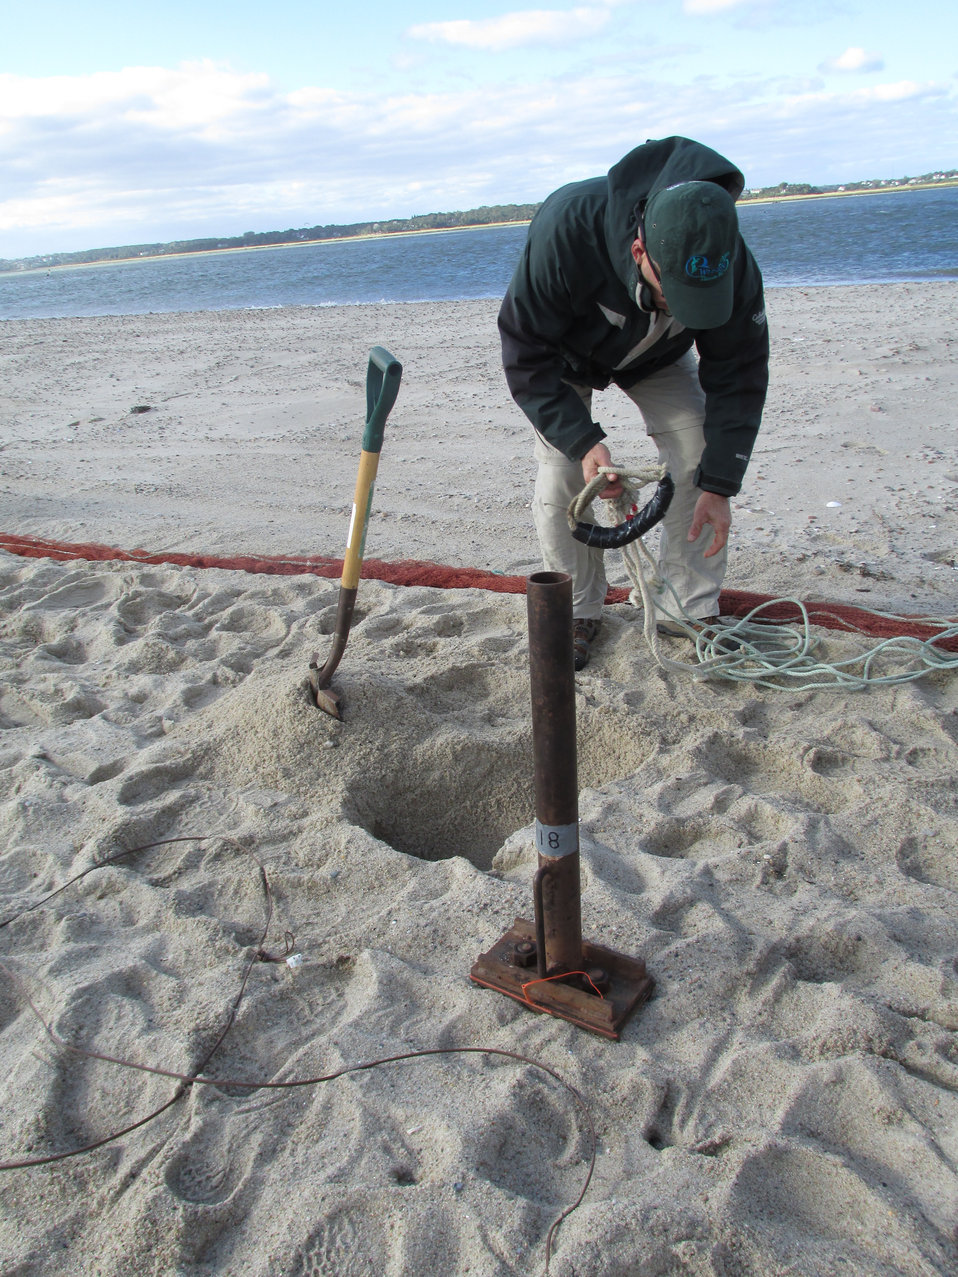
Red knot cannon-netting on Cape Cod

Biologist Larry Niles preparing the cannon-driven nets.